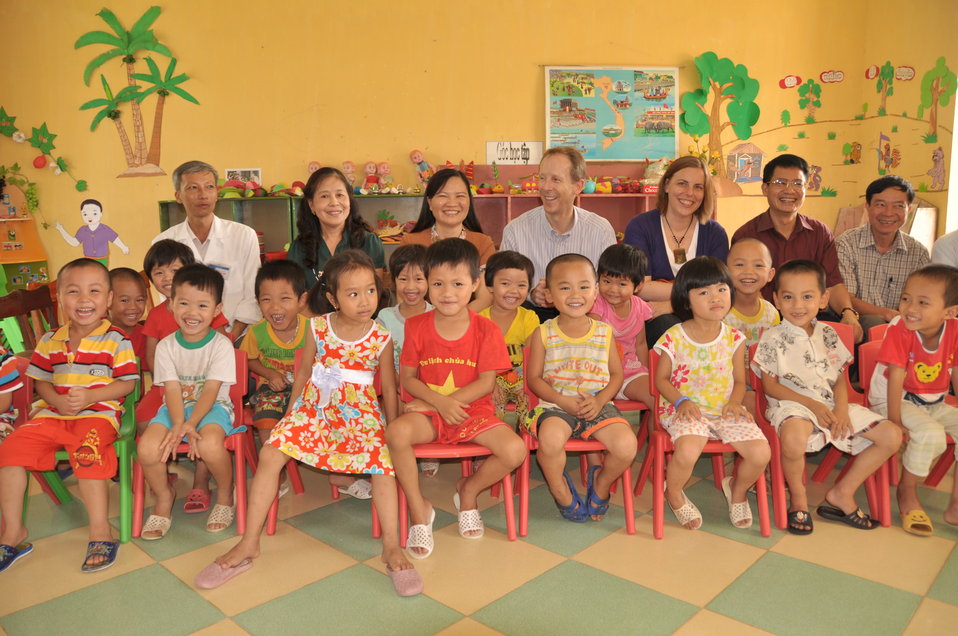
USAID Delivers Deworming Medication to Kindergartners in Nam Dinh Province

Children of Vietnam's Nam Dinh Province receive deworming medicine in a program supported by USAID and World Vision Australia.
June 1, 2013